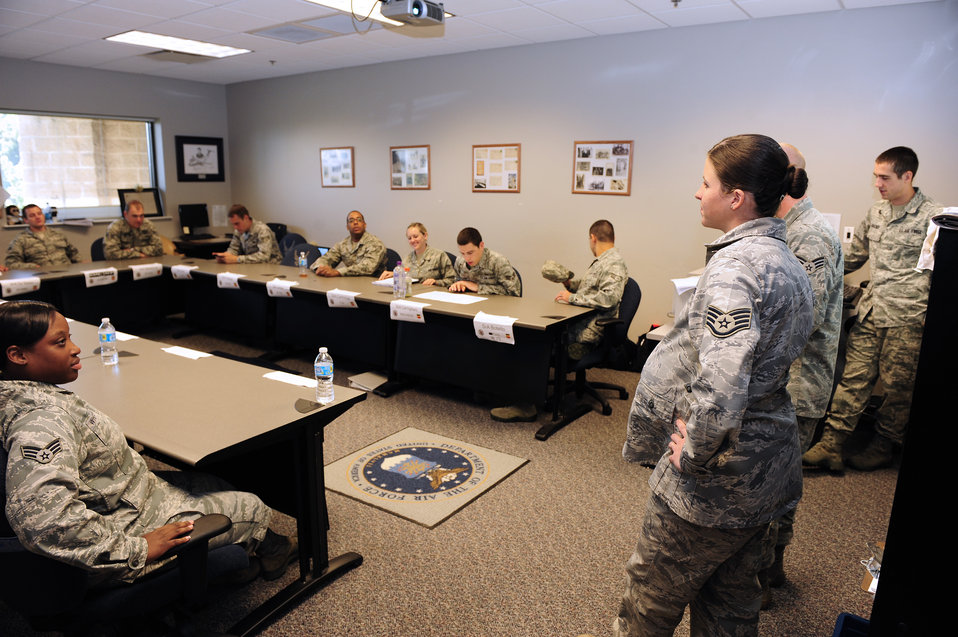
ALS instructor with heart

Staff Sgt. Shelby Bird briefs her class before beginning the public speaking portion of the Airman Leadership School course at Shaw Air Force Base, S.C., Oct. 22, 2012. Students are allotted a certain amount of time to speak during this portion of the course and are graded and critiqued at the end of their briefing. Bird is the 20th Force Support Squadron ALS instructor.